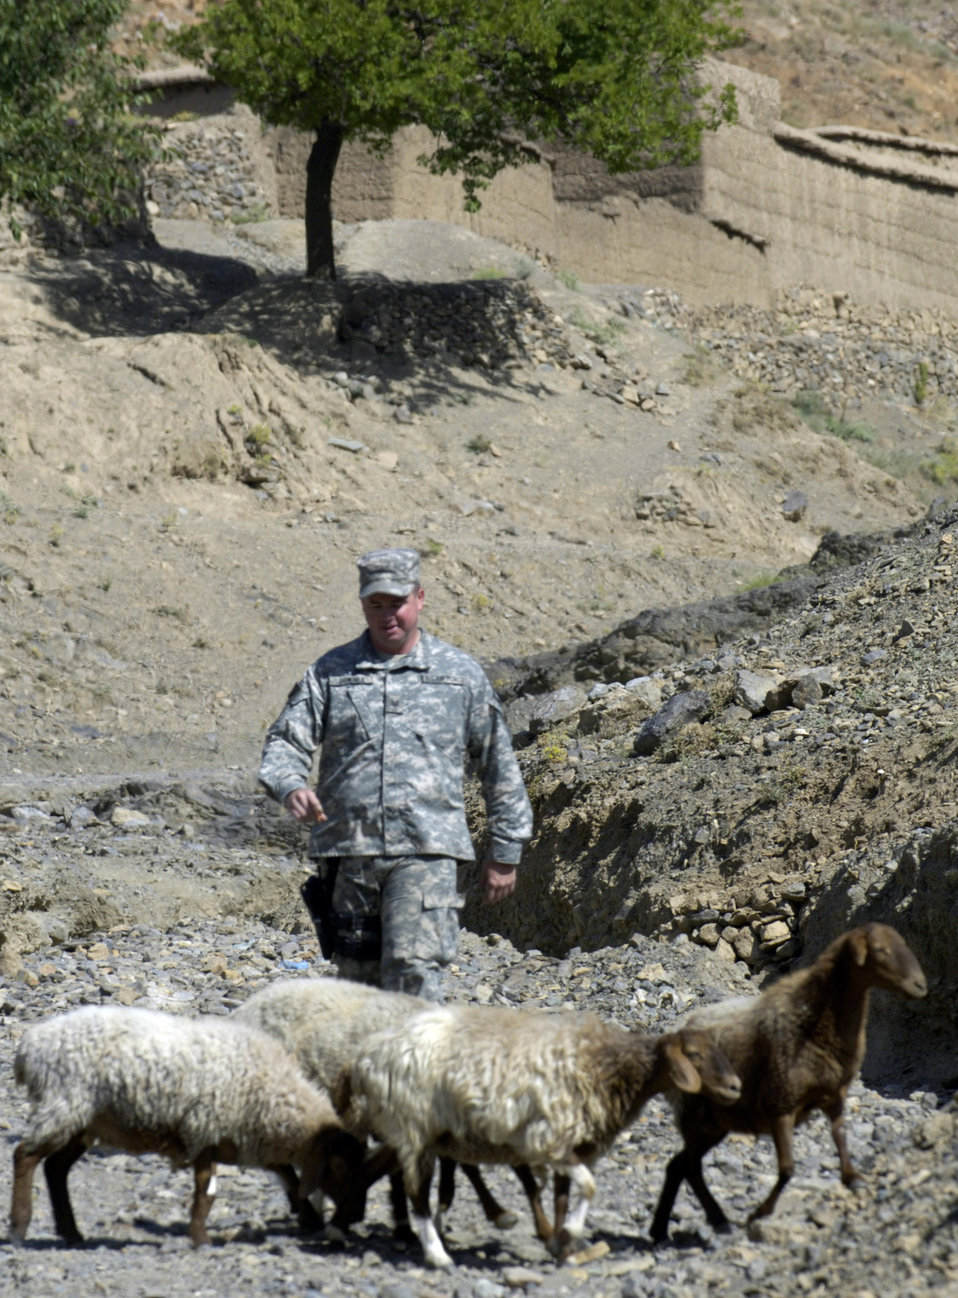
Panjshir PRT

Panjshir Provincial Reconstruction Team member Tech. Sgt. Michael Downey clears the road of some wandering sheep Aug. 6 on the way to provide training to Afghan National Police serving in the province's Anaba district, Afghanistan. Sergeant Downey is a security forces craftsman deployed from the Pentagon, Washington, D.C., to the PRT to assess the infrastructure and development of the ANP force in the Panjshir area. Since its inception in 2005, the PRT has coordinated with the Panjshir government on more than $30 million in development projects.